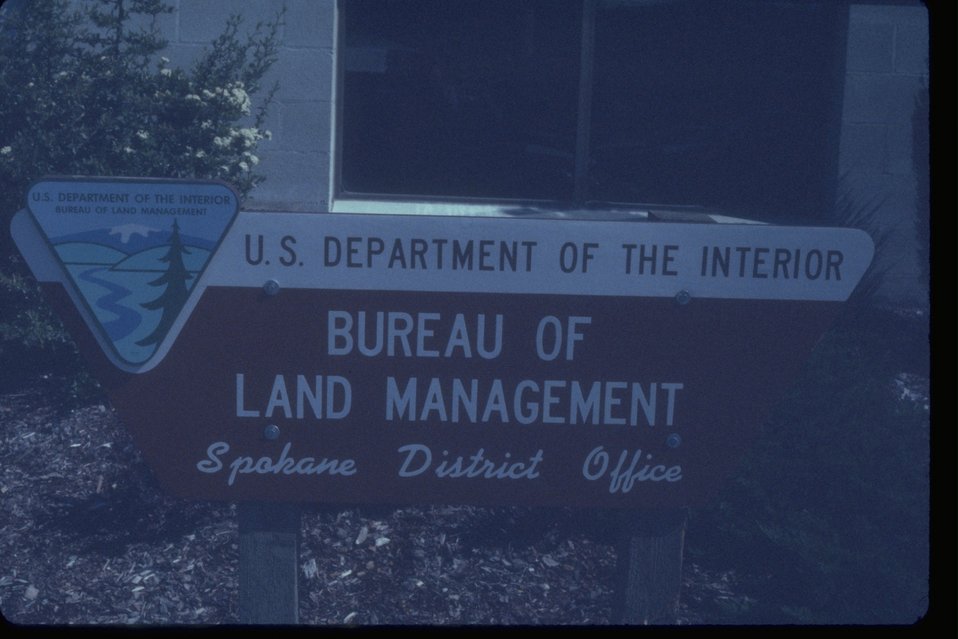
Spokane District BLM sign.